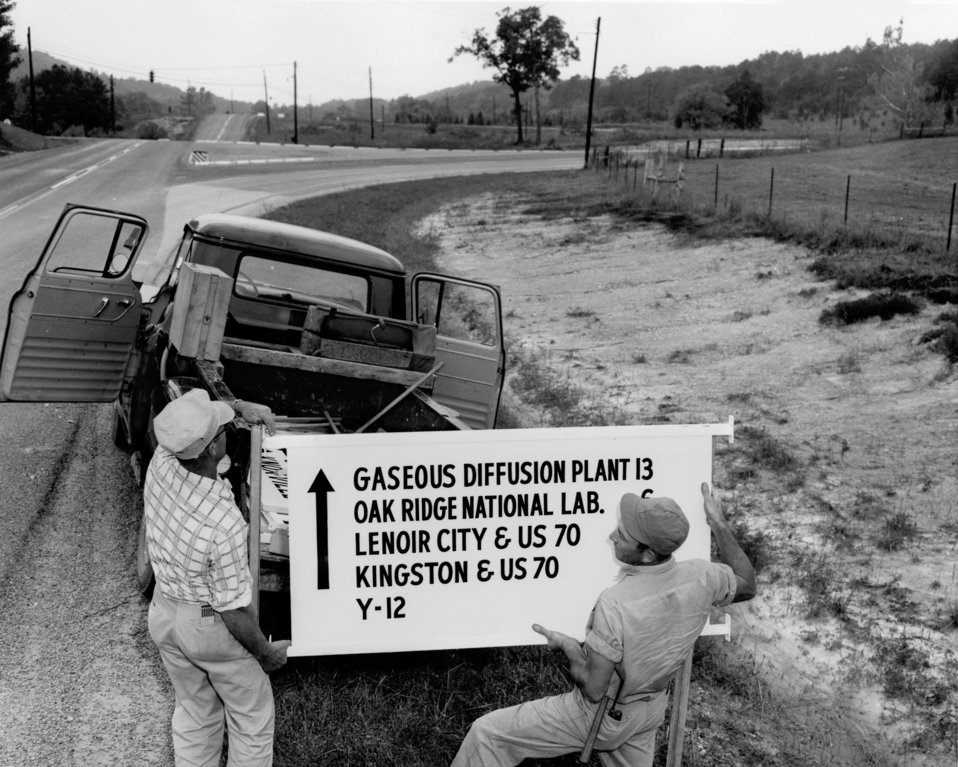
M.S.I. Installing road direction signs Oak Ridge

58-0901A DOE photo by Ed Westcott 10/9/58 Oak Ridge Tennessee